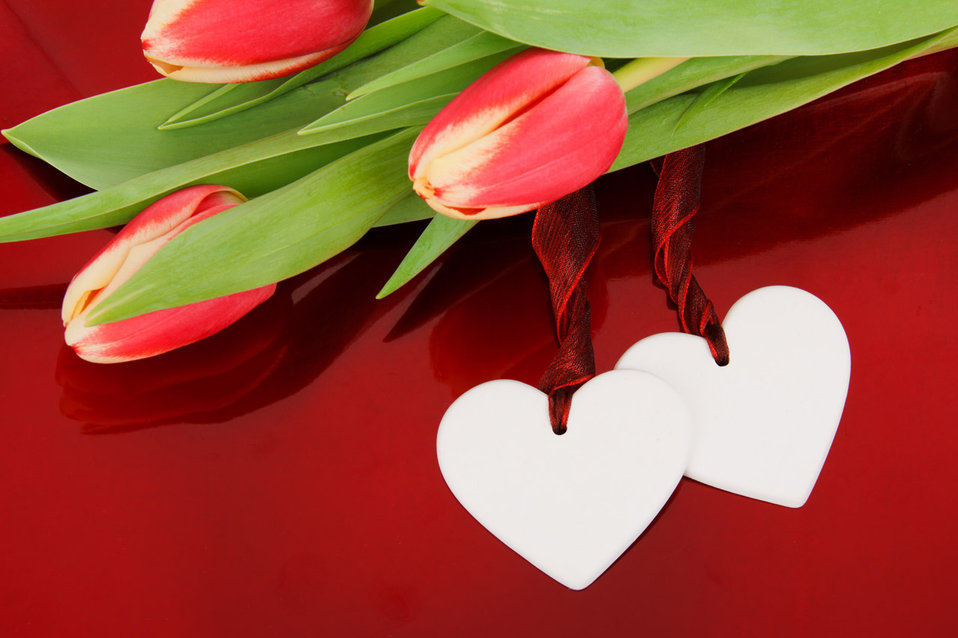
Two hearts and flowers

Two hearts with colorful tulips on red background.